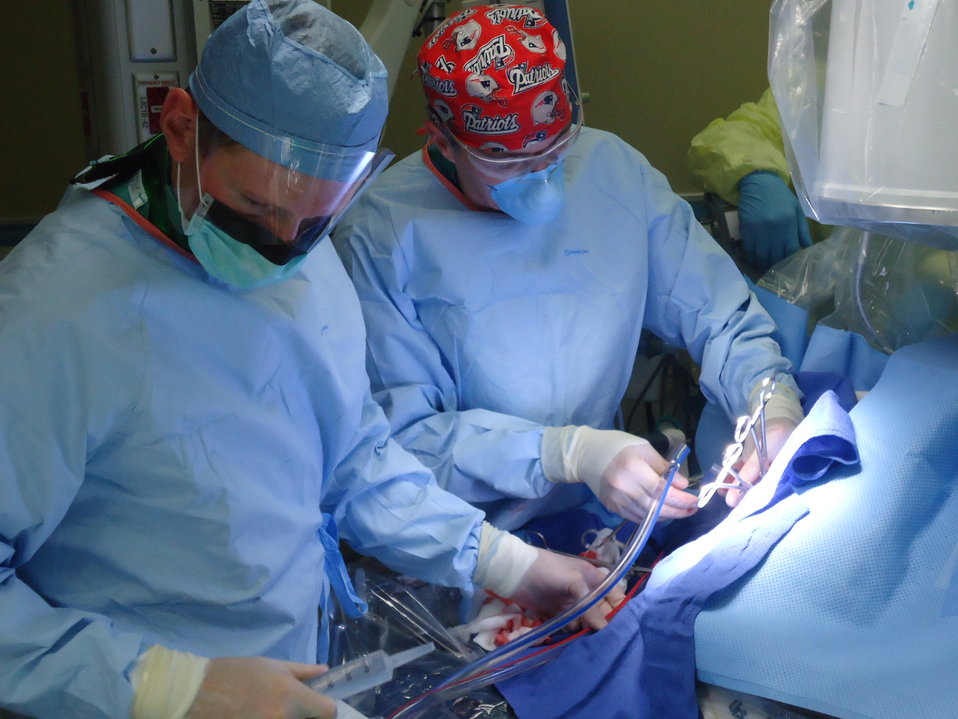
AF doctor uses cutting edge device

Lt. Col. (Dr.) Jeremy Cannon, right, and Dr. Jeremy Pamplin place a patient on extracorporeal membrane oxygenation, or ECMO, in September 2012 at San Antonio Military Medical Center in Texas. ECMO is a heart-lung bypass system that circulates blood through an external artificial lung and sends it back into the patient’s bloodstream.